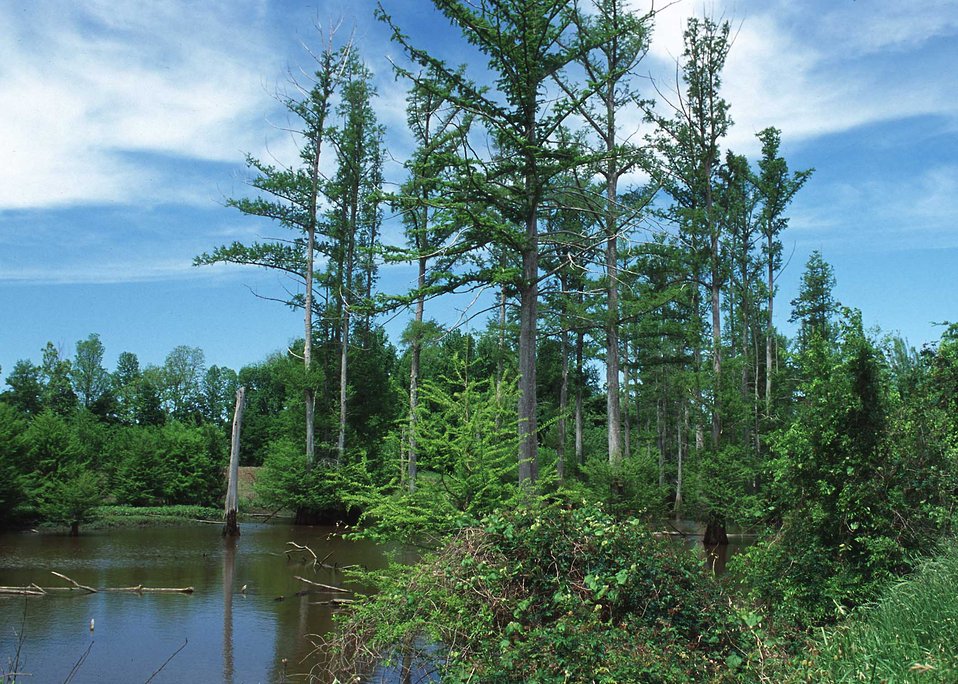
Remnant of a cypress/tupelo wetland in an oxbow in central Mississippi. The land is entered into the Wetlands Reserve Program.